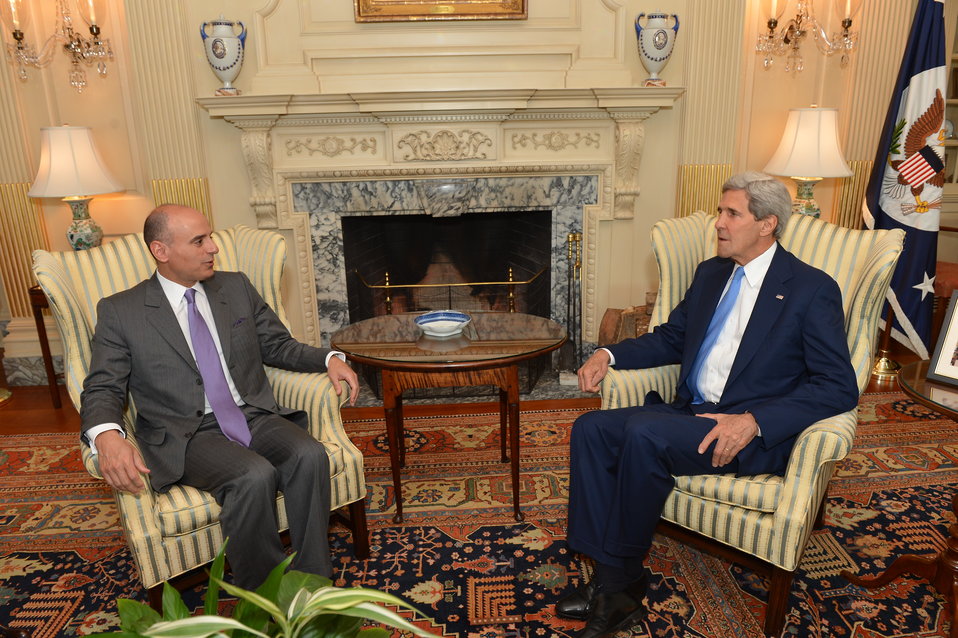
Secretary Kerry Meets With Saudi Ambassador to the U.S. Adel Al-Jubeir

U.S. Secretary of State John Kerry meets with Saudi Ambassador to the U.S. Adel Al-Jubeir, at the U.S. Department of State in Washington, D.C. on June 18, 2014.